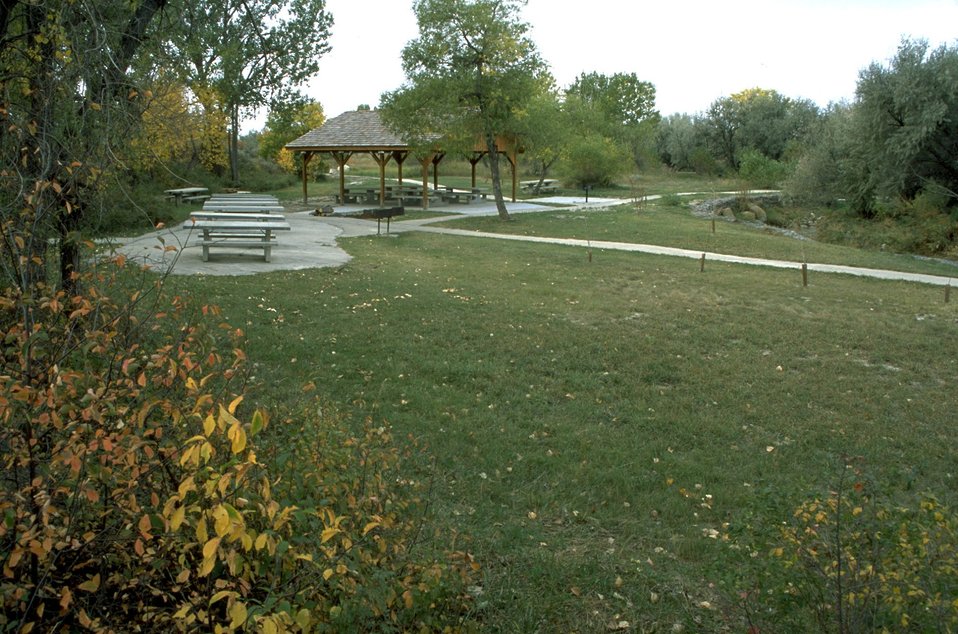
Grassy area in front of picnic shelter at Matthews Recreation Site